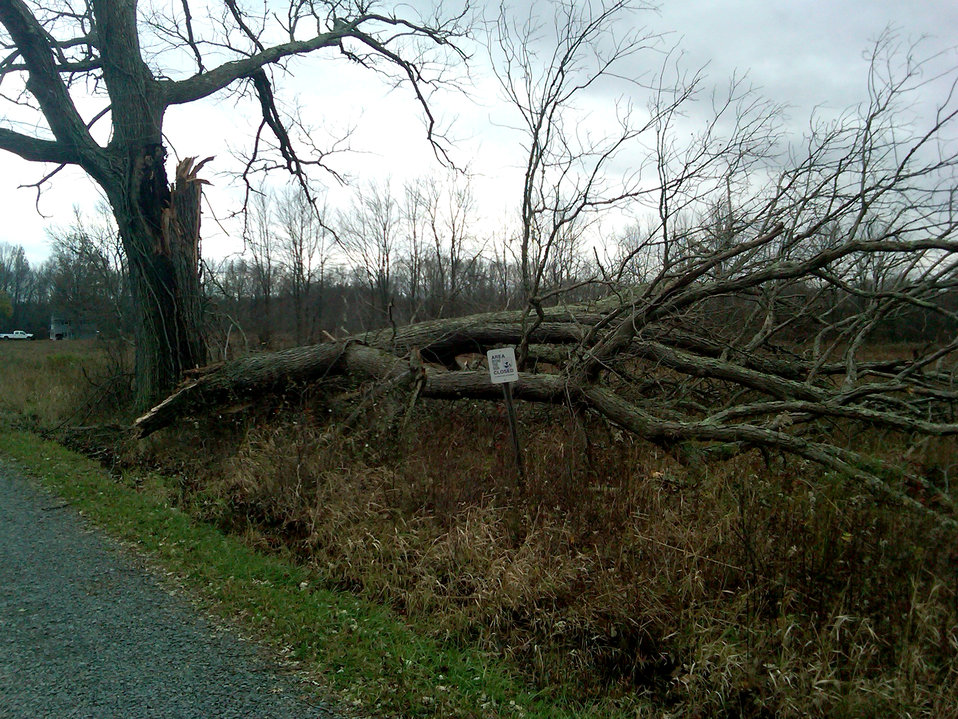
Hurricane Sandy caused damage to Great Swamp National Wildlife Refuge (NJ)

Split tree at the refuge.